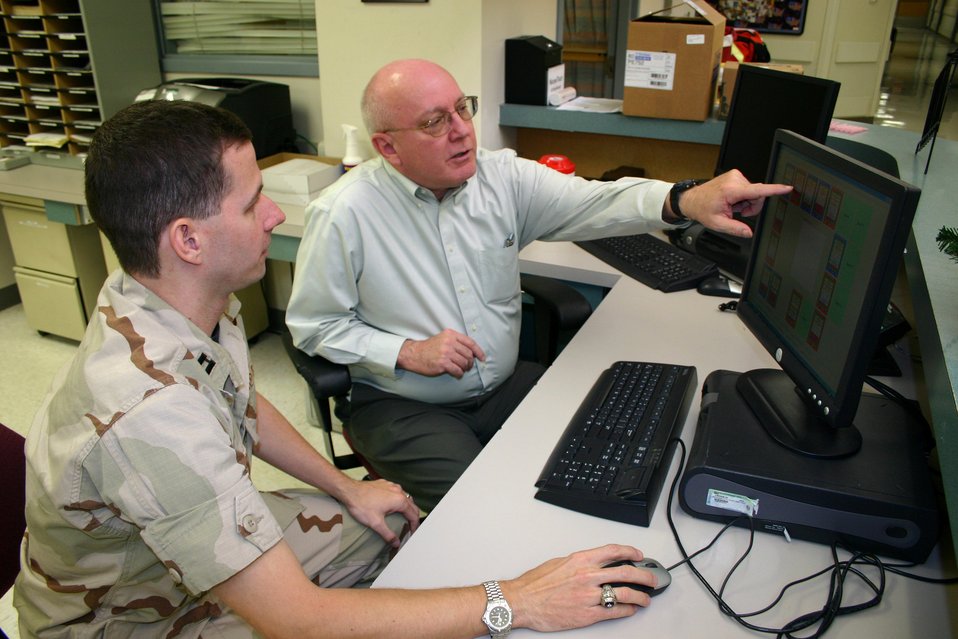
Air Force wins 2006 DOD Patient Safety Award

Capt. (Dr.) Allen Holder discusses graphical interface elements for a patient tracking system designed at Wilford Hall Medical Center with software engineer Ed Hander at Lackland Air Force Base, Texas. Now-Major Holder and Mr. Hander were key to the 59th Medical Wing being recognized during the annual TRICARE conference as a 2006 Department of Defense Patient Safety Award winner.